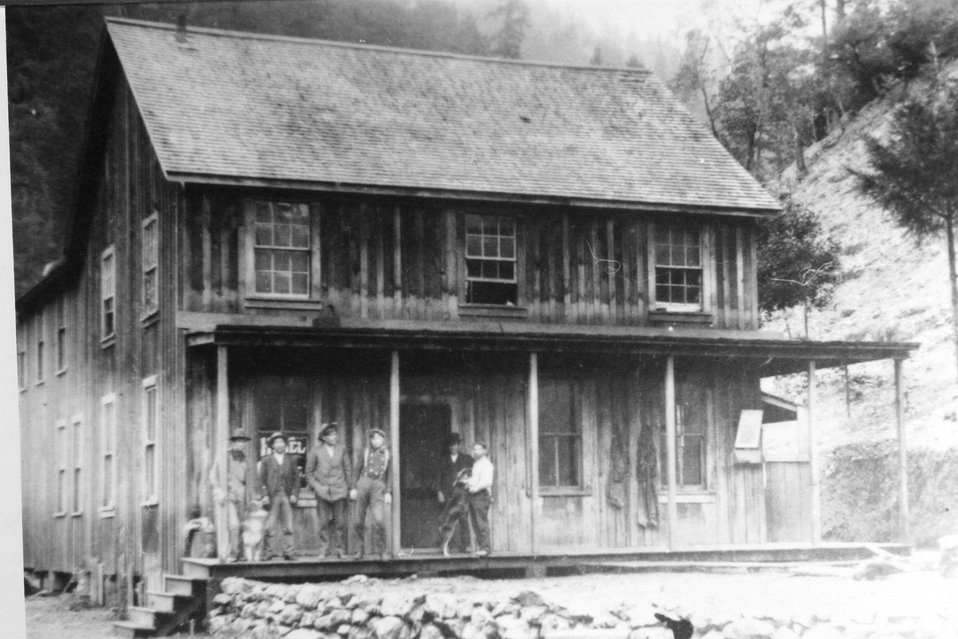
West Fork Hotel. (L to R0 Jake Croy, Jake Fry Charley Billings, Adrew Huggins, Unidentified man and Chauncey Fry. C. 1910